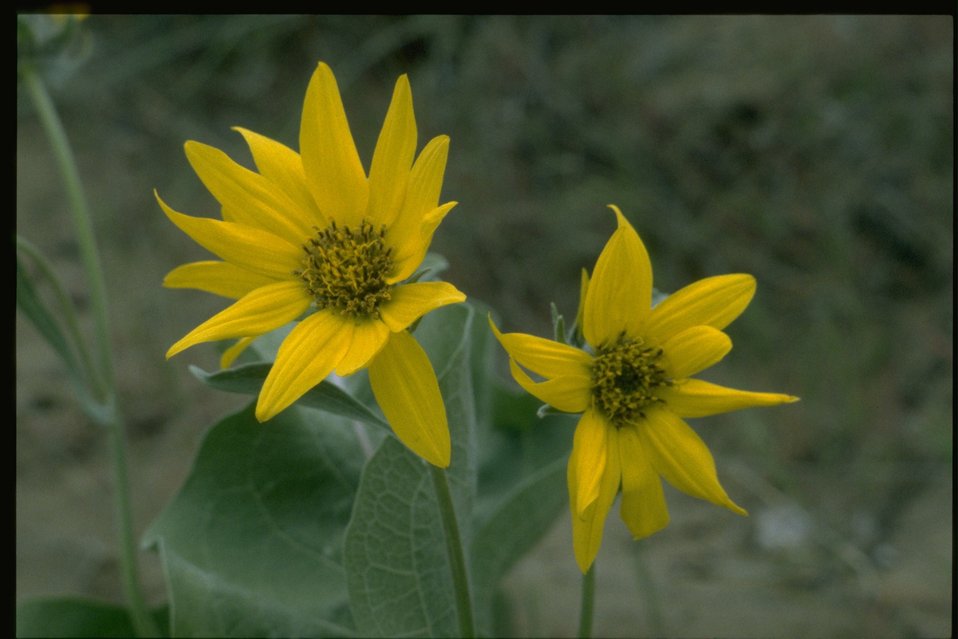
Closeup shot of Balsam Root wildflowers.